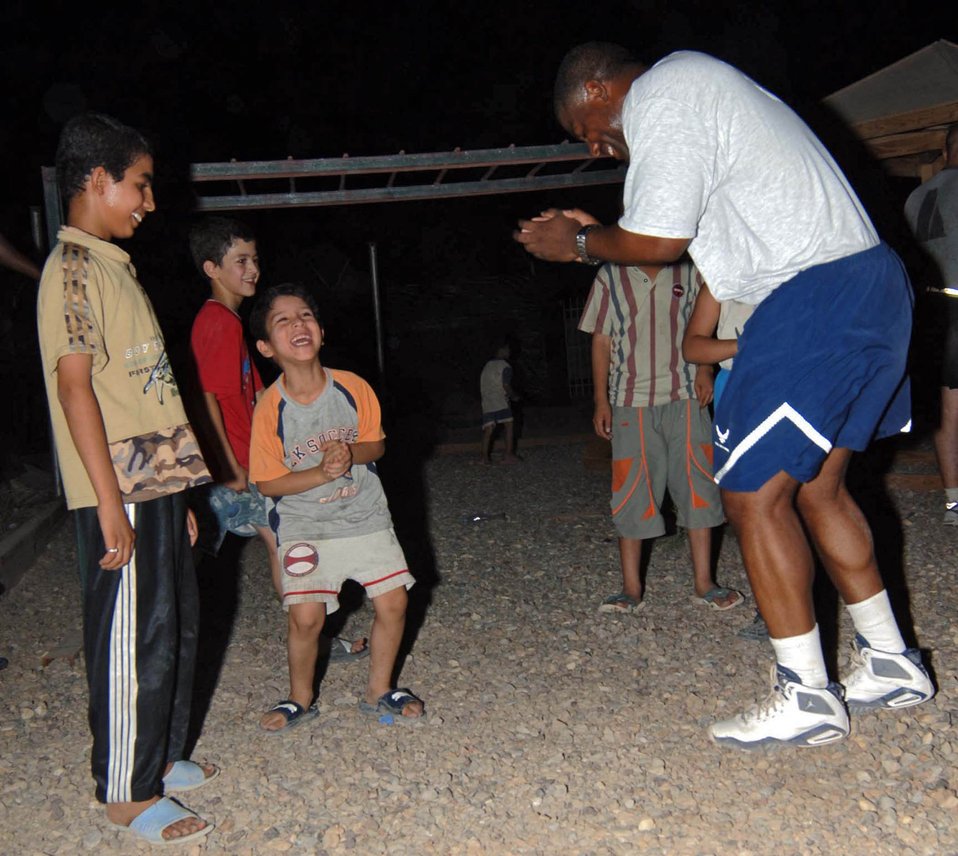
Airmen, Soldiers form relationships with Iraqi children

Senior Airman Derrell Hendricks dances to an Arabic chant sung by Iraqi children during a humanitarian visit at the Victory Base Complex, Iraq July 29. A group of Airmen and Soldiers visited with Iraqi soldiers and their children. Airman Hendricks is a 447th Expeditionary Security Forces Squadron patrolman.